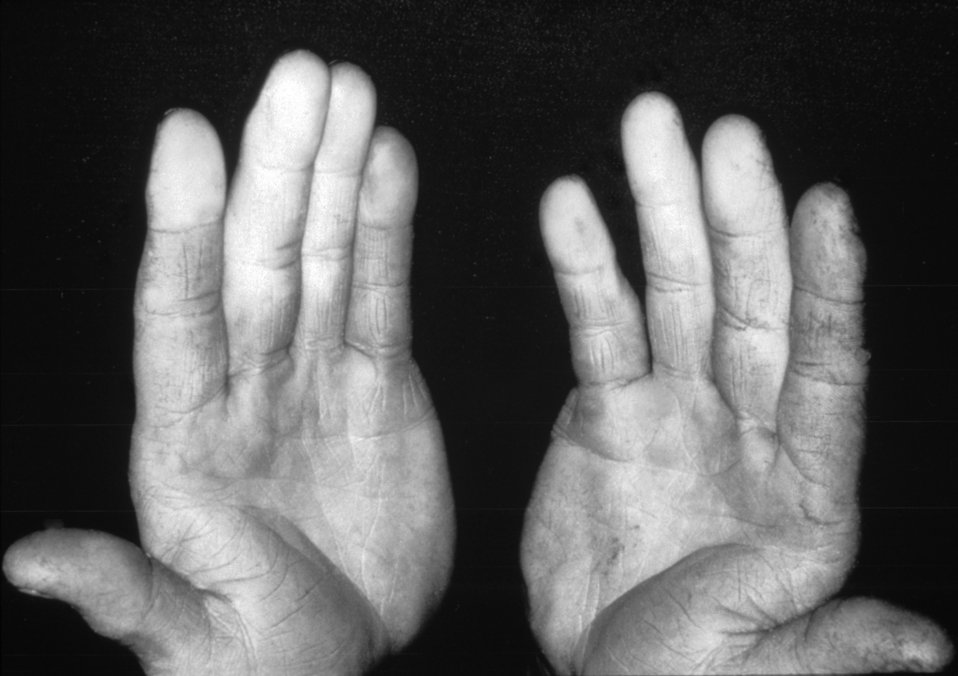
Photo of a patient with White Finger Disease due to working with a jackhammer.